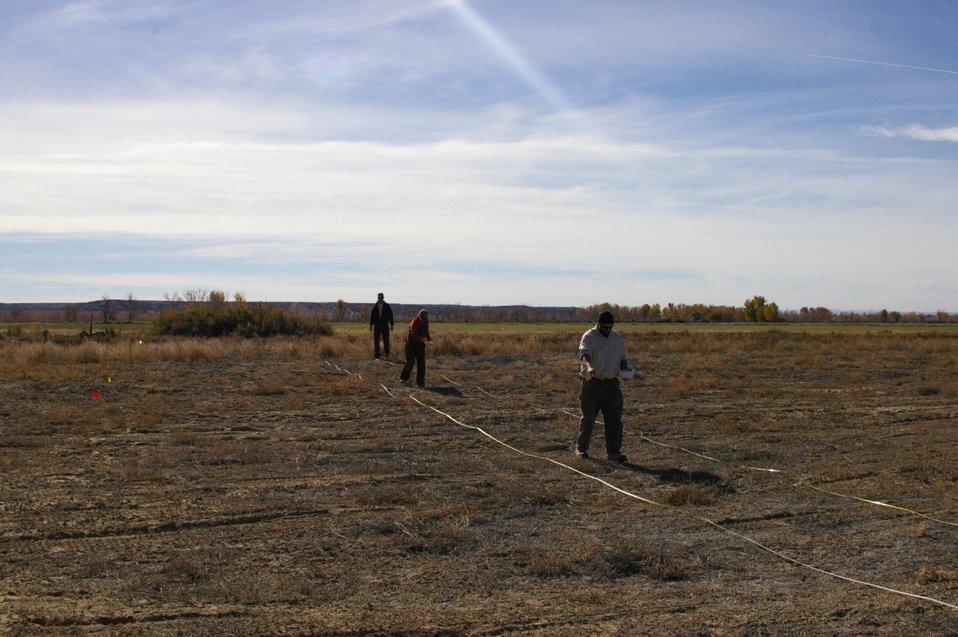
Hand Broadcasting Seed

These folks are hand seeding native grassland seed into one of the study plots one type of seed at a time. This is part of a grassland research project at Ouray National Wildlife Refuge.